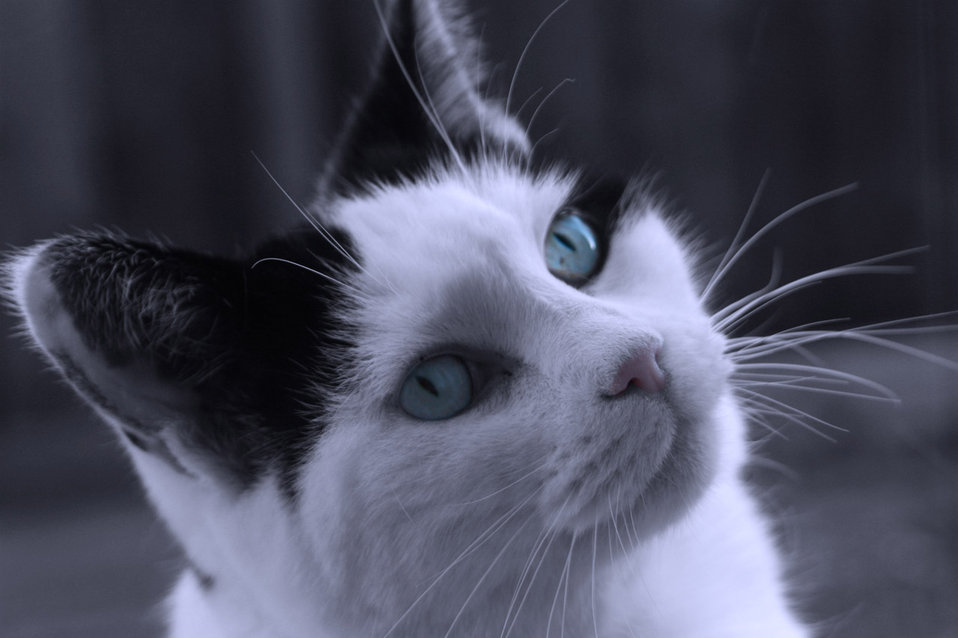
Cat with blue eyes.